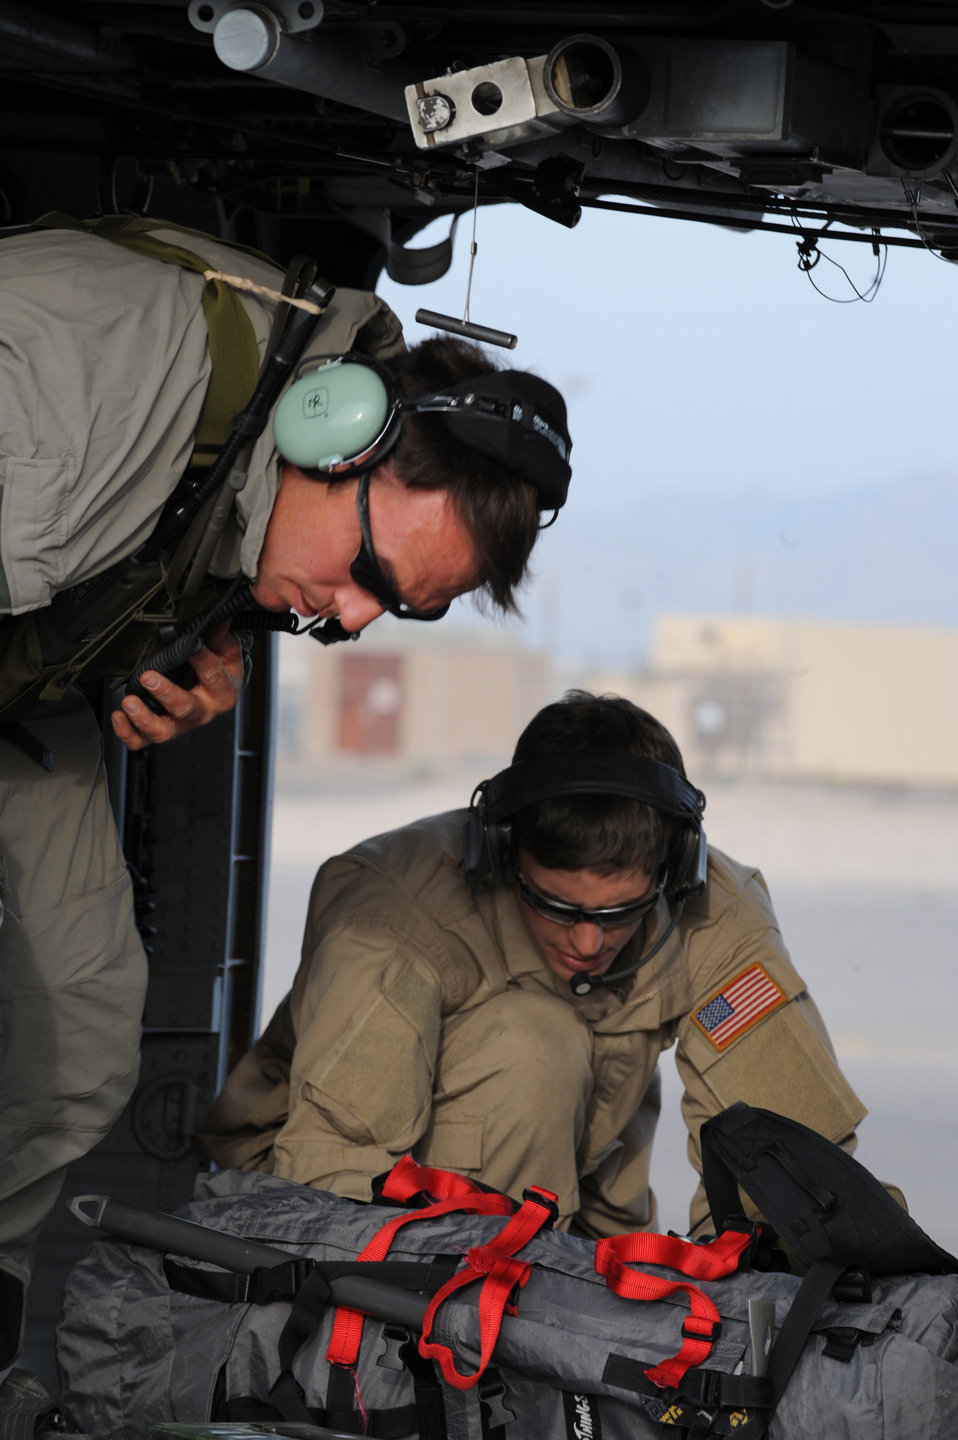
Nellis Airmen locate missing aircraft

Staff Sgt. Jerry Lennon and Senior Airman David Coval inspect all equipment for discrepancies aboard HH-60G Pave Hawk prior to departing for a rescue mission May 1 at Nellis Air Force Base, Nev. Four helicopters and 24 Airmen from the 58th and 66th Rescue Squadrons deployed to assist in the search for a pilot and passenger who were aboard a motorized sailplane that disappeared from radar April 24 in the Sierra Nevada Mountain Range near Mammoth Lakes, Calif.Sergeant Lenon and Airman coval are pararescuemen with the 58th Rescue Squadron.